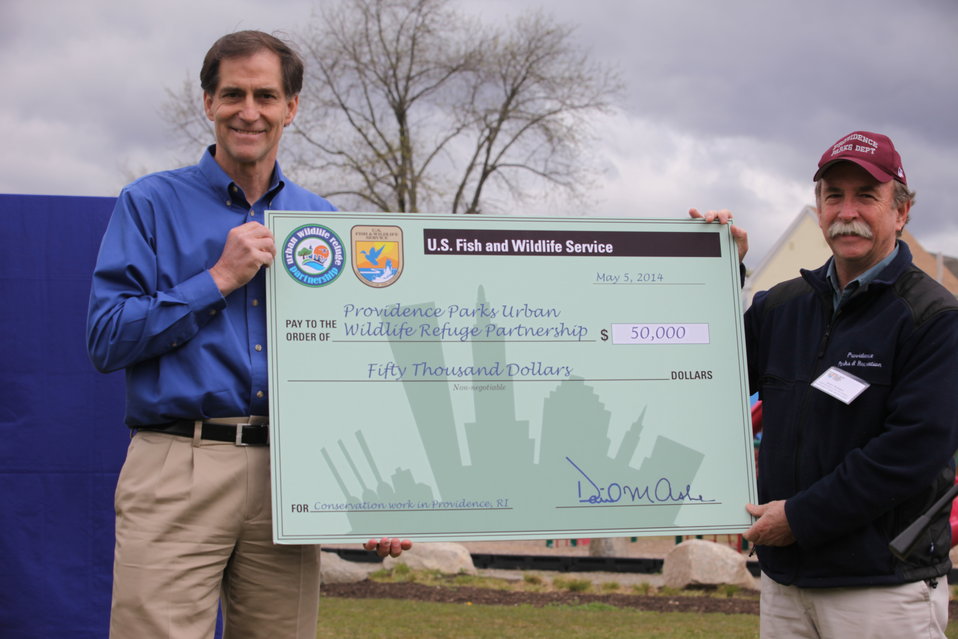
Presenting the large check

Service Director Dan Ashe presents Robert McMahon, Superintendent of the Providence Parks and Recreation Department with a $50,000 grant to continue the conservation work of the Providence urban partnership.